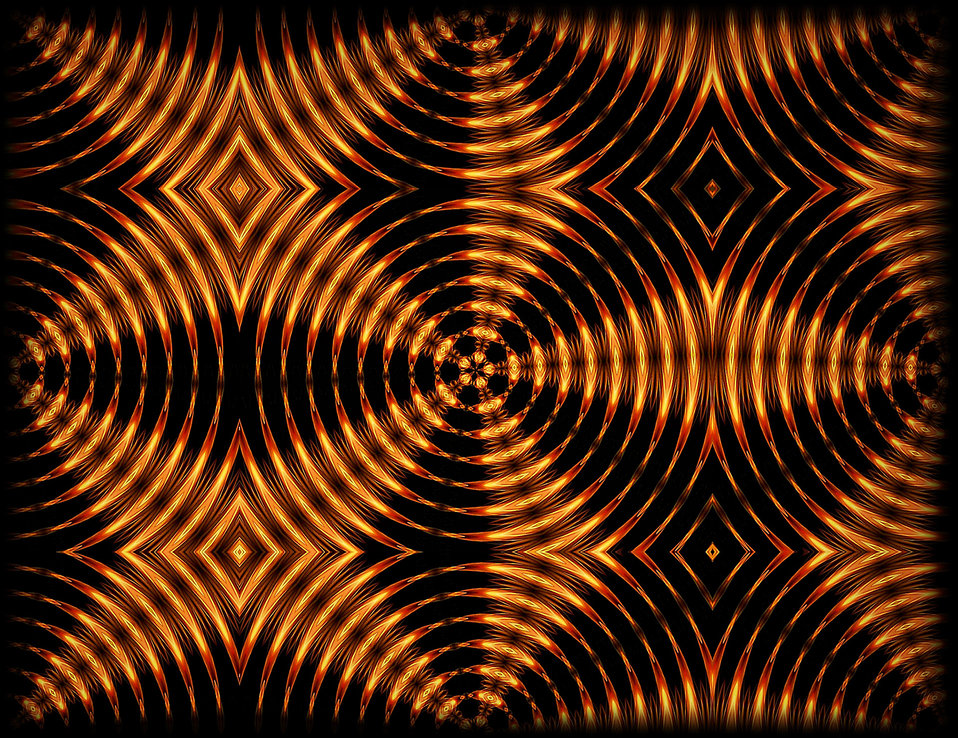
Fractal patterns

Fractal pattern of fire color.